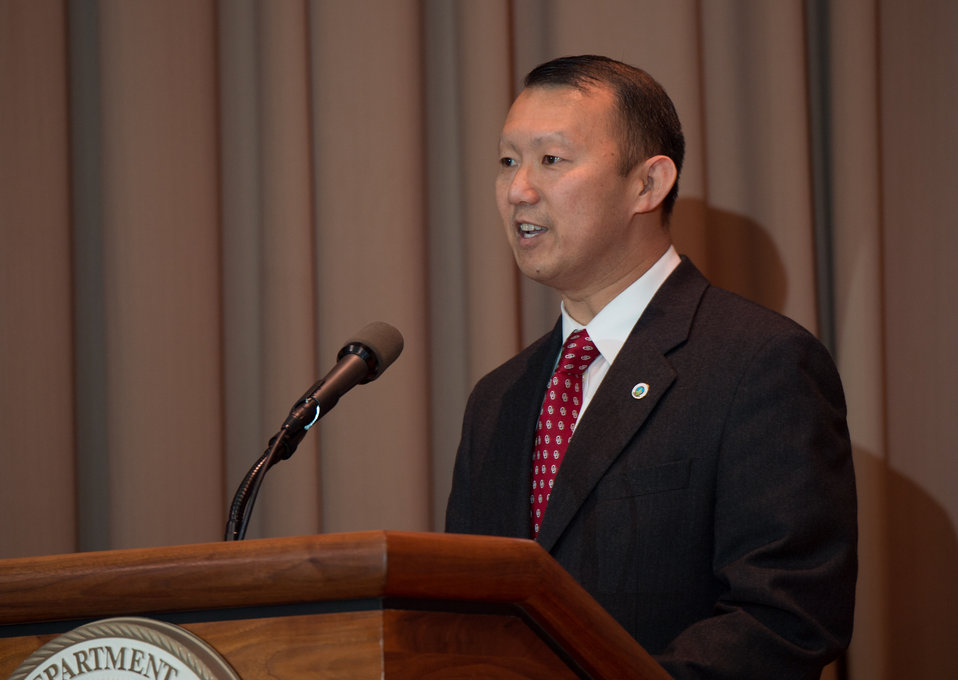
U.S. Department of Agriculture (USDA), Departmental Management (DM), ,American Indian and Alaska Native Diversity Program Manager Frederick Cheng provides the introduction for the 2013 American Indian and Alaska Native Heritage Observance at the USDA on Thursday, Nov. 14, 2013 in Washington, D.C. The theme of this year’s event was “Guiding Our Destiny with Heritage and Traditions.”